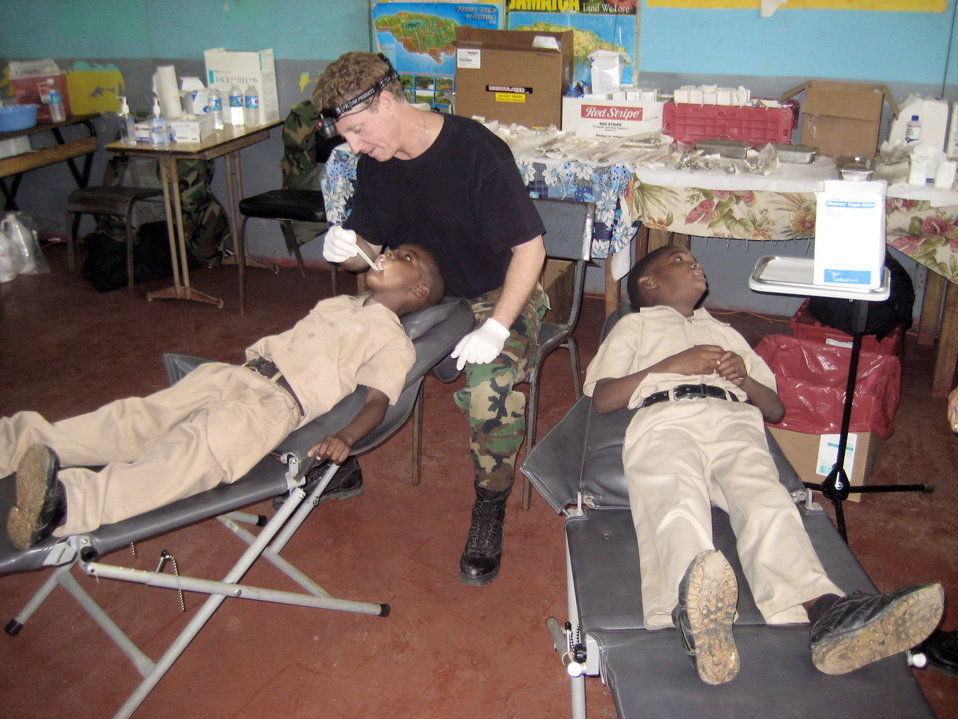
Airmen go 'Beyond the Horizon' to help Jamaicans

Lt. Col. (Dr.) Mark Emshwiller inspects the teeth of two Jamaican school children to identify cavities and offer referrals April 15 in Jamaica. While at Lottery All Age School, Colonel Emshwiller saw 108 children in two hours. Colonel Emshwiller is an Arizona Air National Guard dentist.